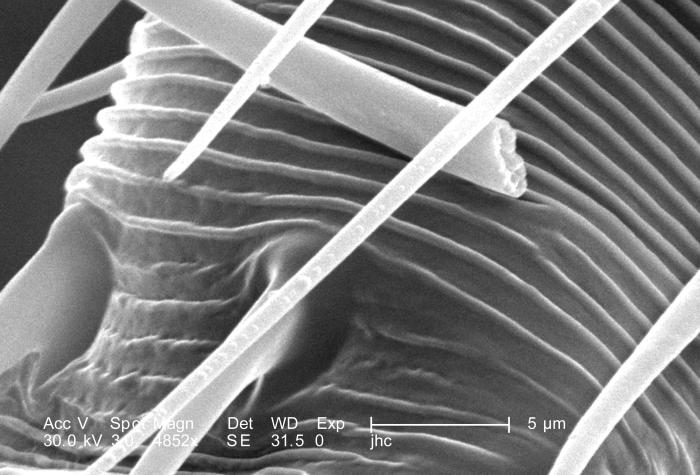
Under a high magnification of 4852X, this scanning electron micrograph (SEM) revealed some of the morphologic features located upon the surface of one of the two antennae used by an unidentified 1/4"-sized black flying insect with a small red mark on its dorsum, in order to detect changes in the organism's environment such a wind speed and direction, chemical queues, i.e., pheromones, and variations in temperature. The antenna is composed of three main regions: scape, pedicle, and flagellum. The scape attaches the sensory organ to the head region, and the pedicle joins the distal, jointed flagellum to the scape.